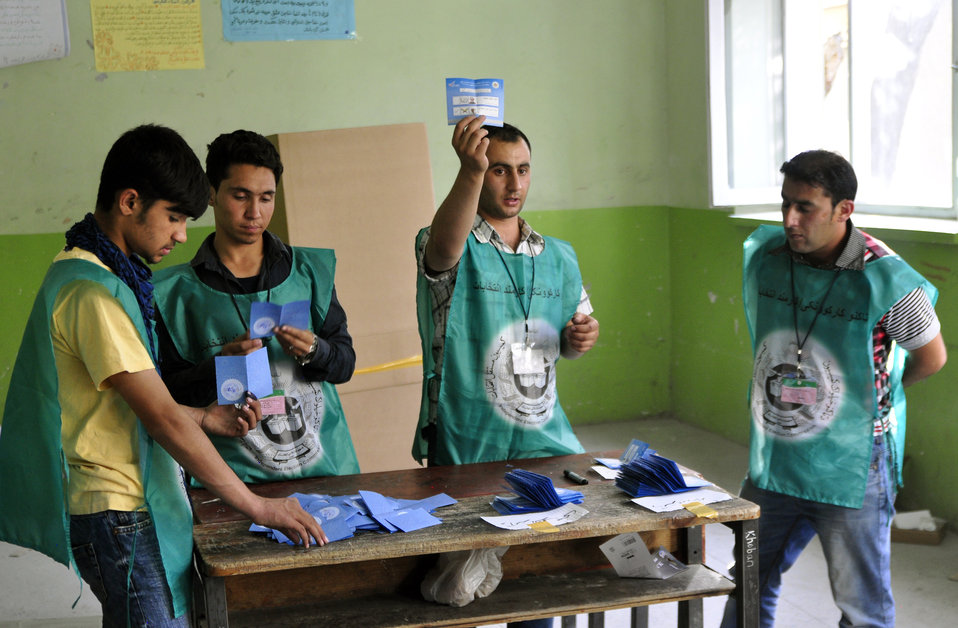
Workers of IEC count ballots at a polling center in Kabul.